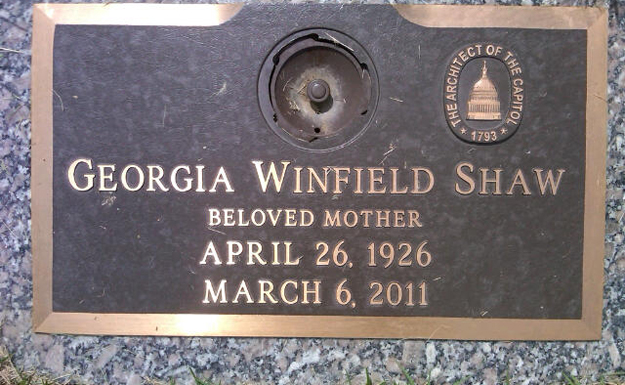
AOC Trailblazer: Georgia Shaw

Georgia Shaw was the first woman hired by the AOC as a draftsman, leading to a fulfilling 29-year career with the agency. After Georgia passed, her daughter honored her mother’s legacy by including the AOC’s logo on the memorial plaque that marks her grave.